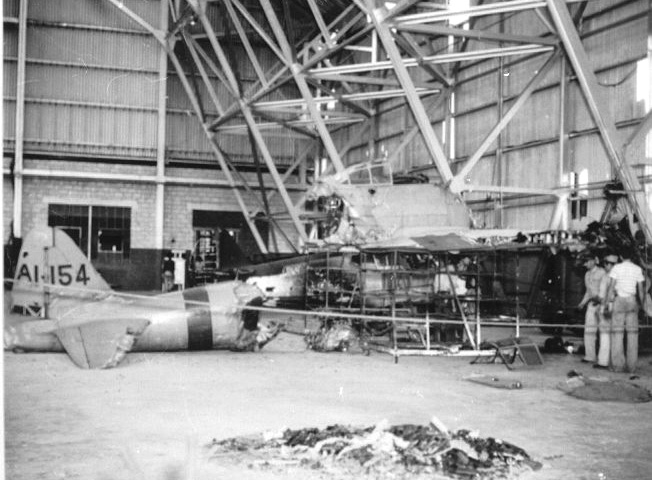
Japanese Zero

Wreckage from a Japanese Zero sits in a Hickam Field hangar after the Dec. 7 attacks.